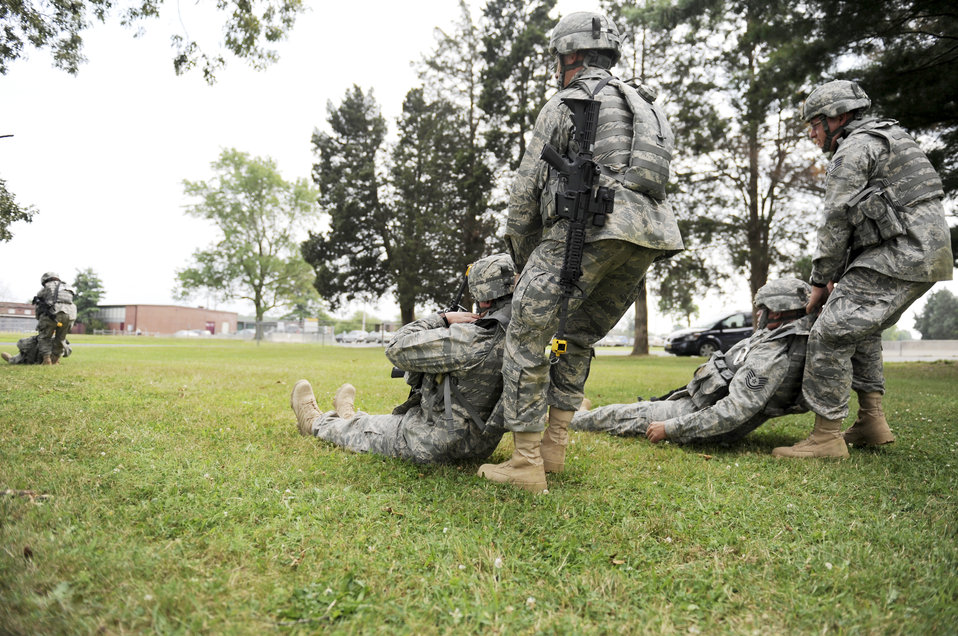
Airmen prepare for deployment

Soldiers, Sailors and Airmen drag out